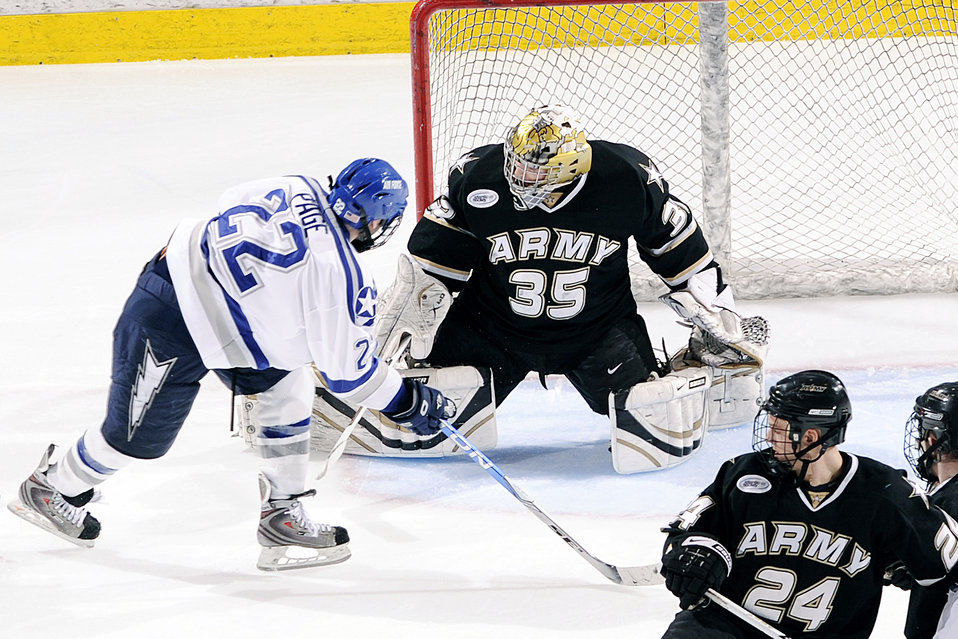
Air Force beats Army Black Knights

Falcon forward Blake Page goes up against Army goalie Jay Clark as Air Force defeated Army 3-0 at the U.S. Air Force Academy's Cadet Ice Arena March 12, 2010. Air Force went on to win the best-of-three series 2-0 advancing to the Atlantic Hockey Association Final Four against Sacred Heart March 19 in Rochester, N.Y.